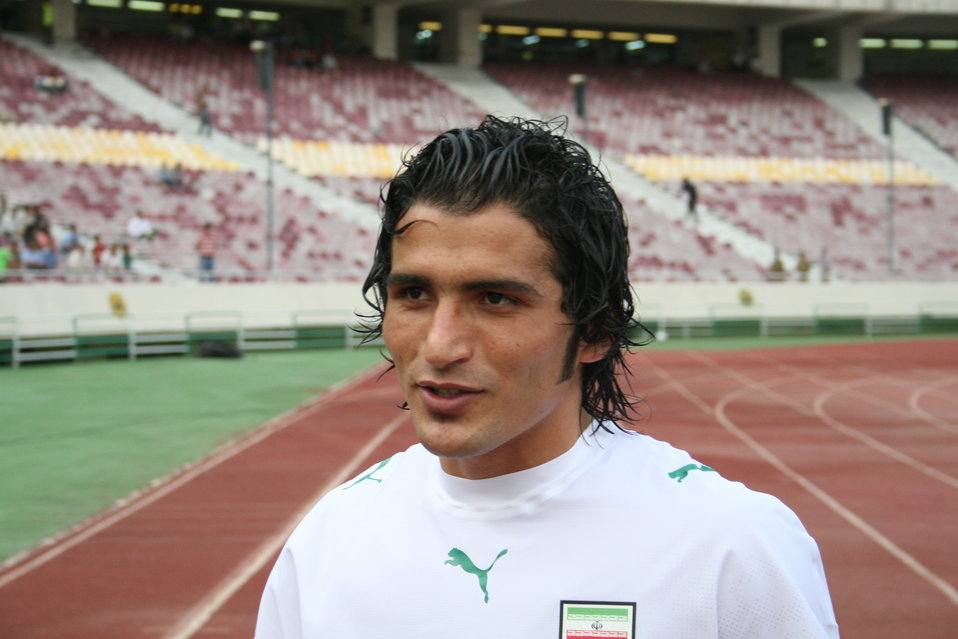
Javad Kazemian in 2006